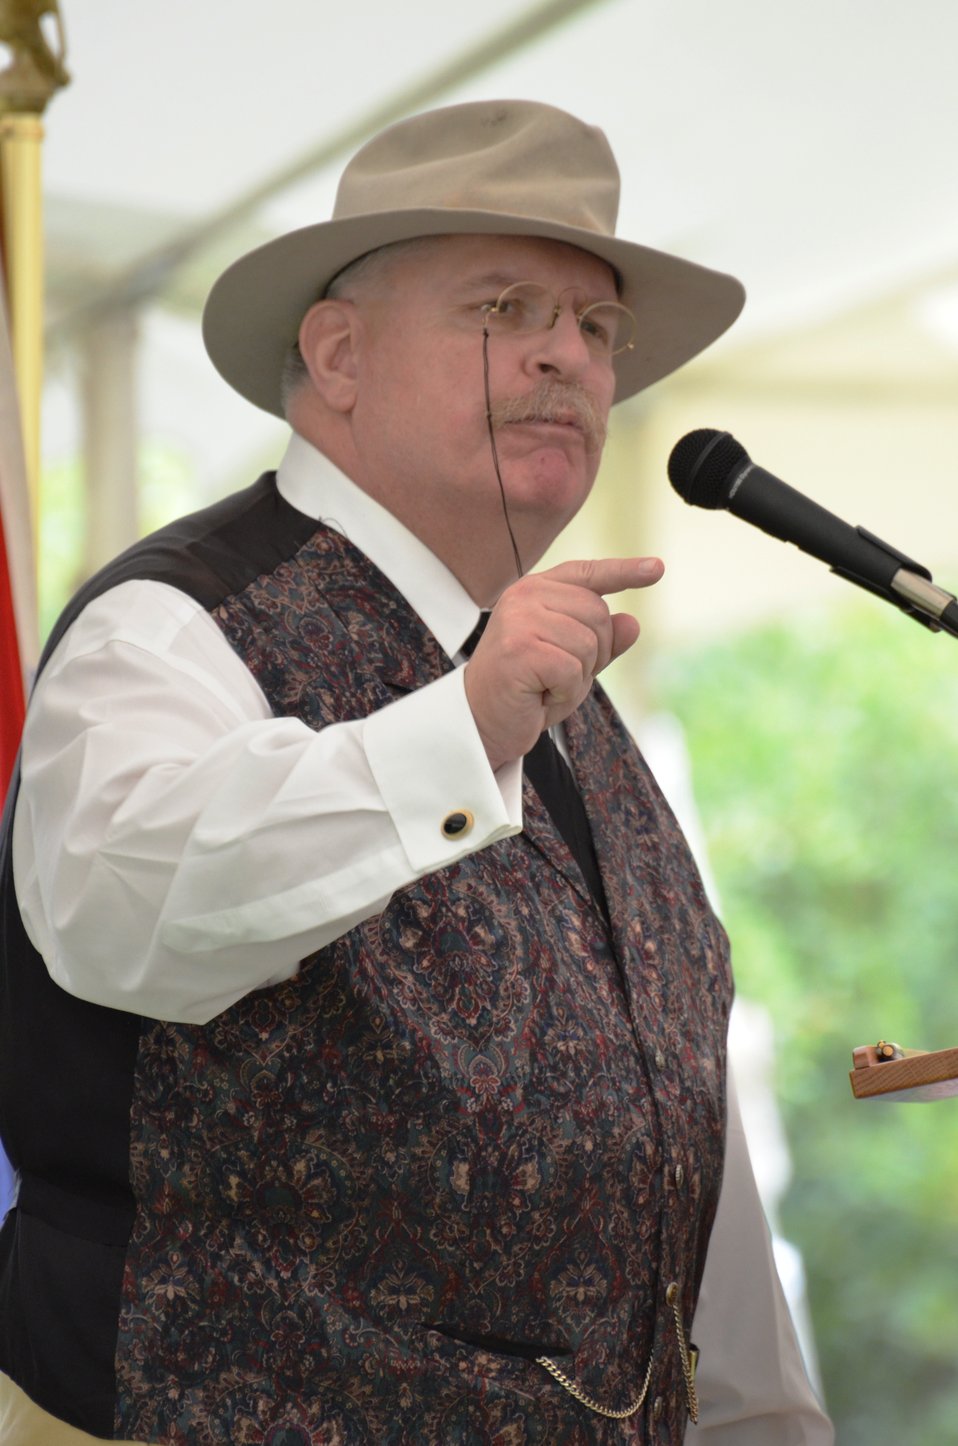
Theodore Roosevelt Comes to the Party

Case Hicks, performing as Theodore Roosevelt, gave a short presentation at the National Elk Refuge's centennial ceremony. He also led a children's program later that afternoon and gave a second performance the following day for audiences of all ages.

Credit: USFWS / Bobby Harkey, National Elk Refuge volunteer